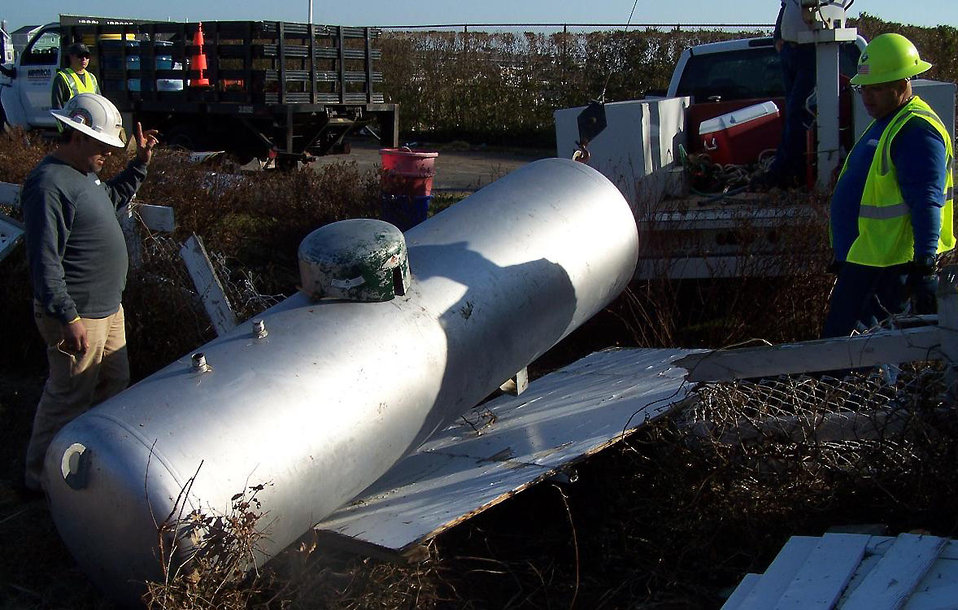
Propane Tank in Rumson, NJ

A propane tank is being lifted with a winch in Rumson, NJ.